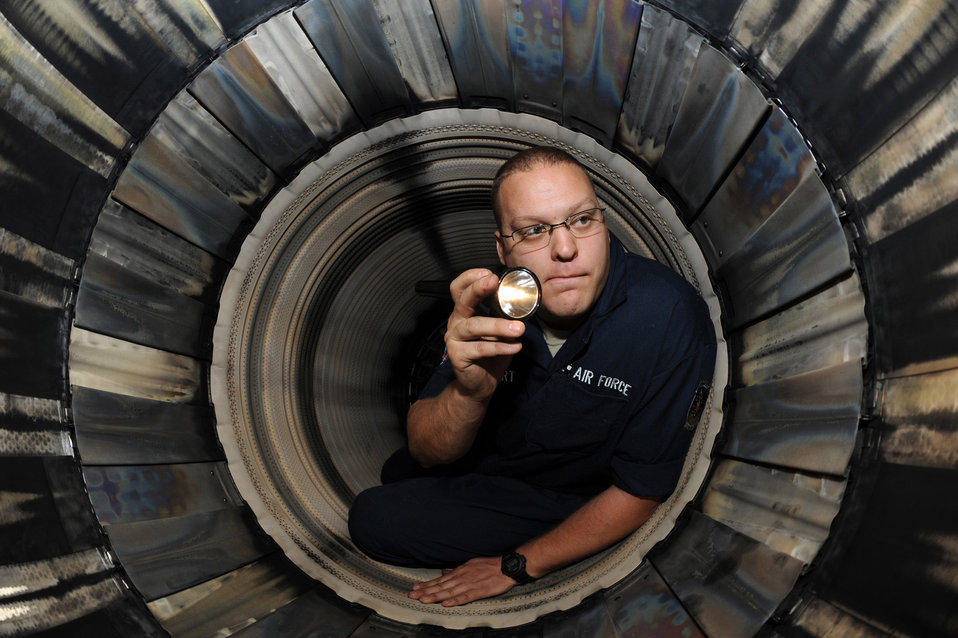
Engines running

Staff Sgt. Robert Stewart inspects the convergent seal and liner of the augmenter on an uninstalled Pratt and Whitney jet engine at Seymour Johnson Air Force Base, N.C., May 21. Sergeant Stewart is responsible for inspecting the fans inside the augmenter. Sergeant Stewart is assigned to the 4th Component Maintenance Squadron as an aerospace propulsion specialist.